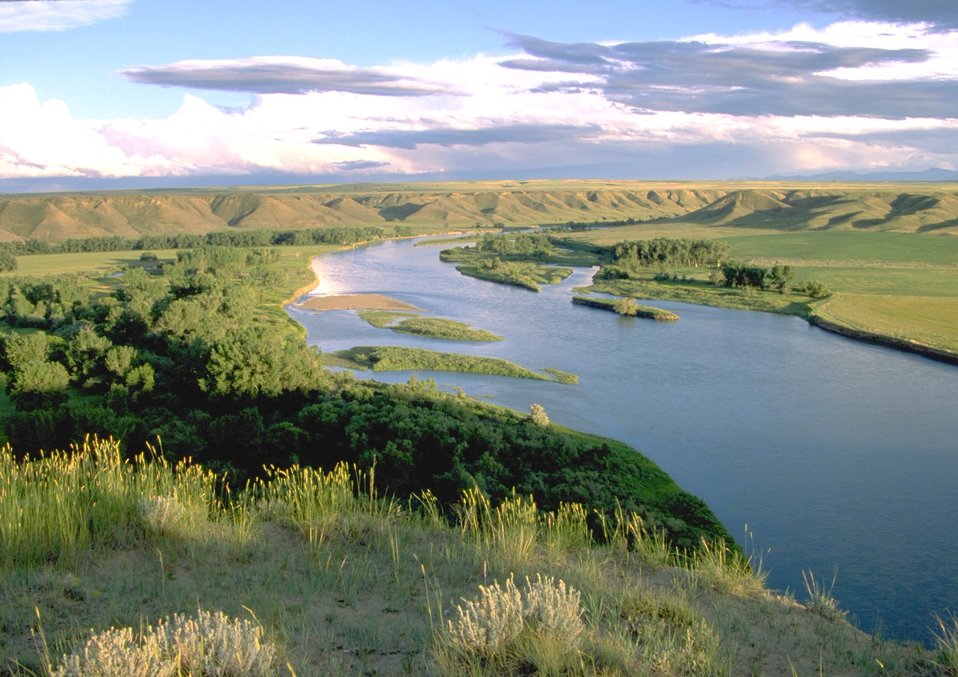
Decision Point-the confluence of the Missouri and Marias Rivers